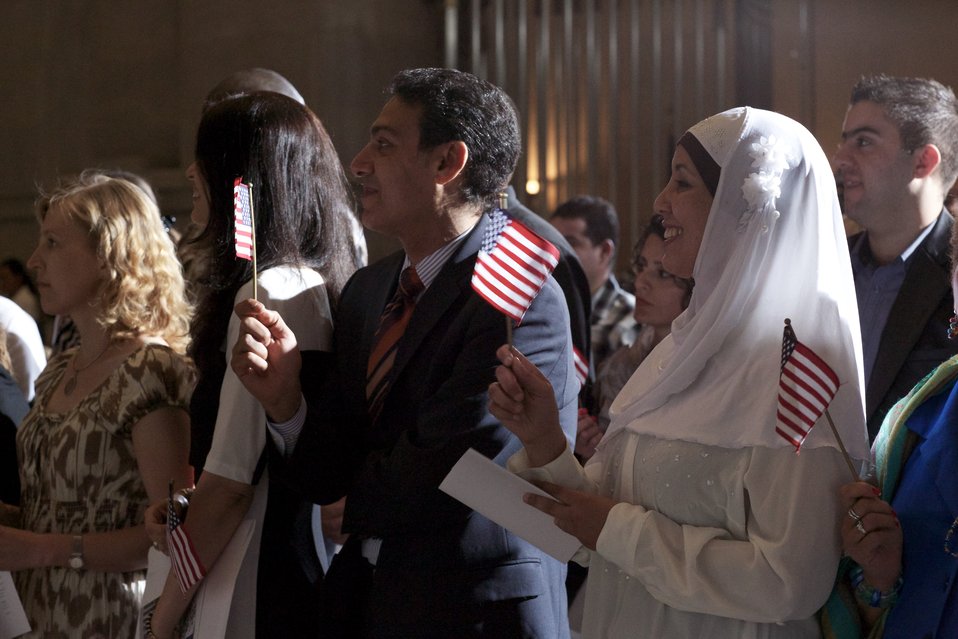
Naturalization Ceremony with Michelle Obama